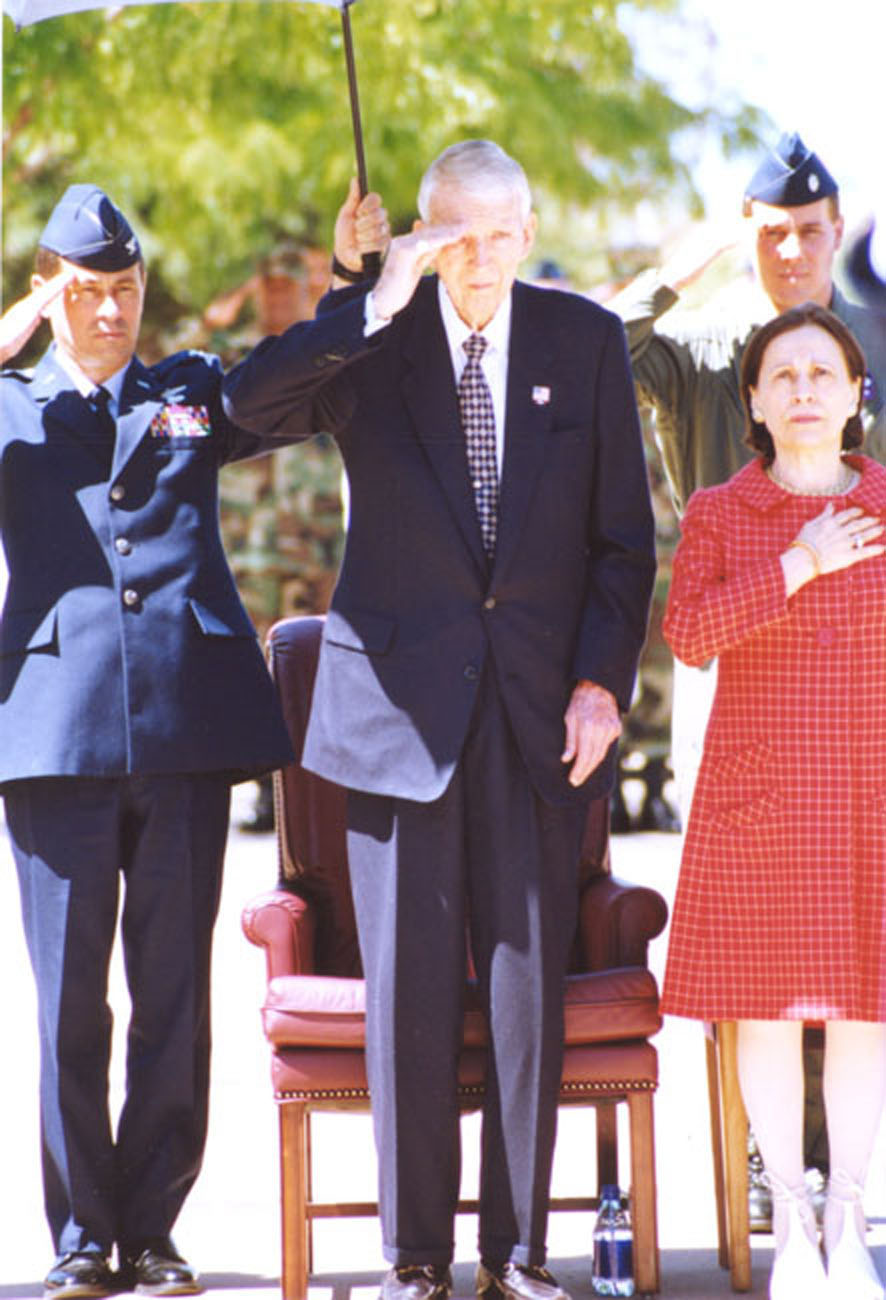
General Schriever's last visit

Gen. Bernard Schriever and his wife, Joni, visited his namesake base for the last time Aug. 30, 2002. Airmen presented him with a special retreat ceremony, a framed collection of coins and patches, a saber salute and a surprise salute from the roadside as he departed.